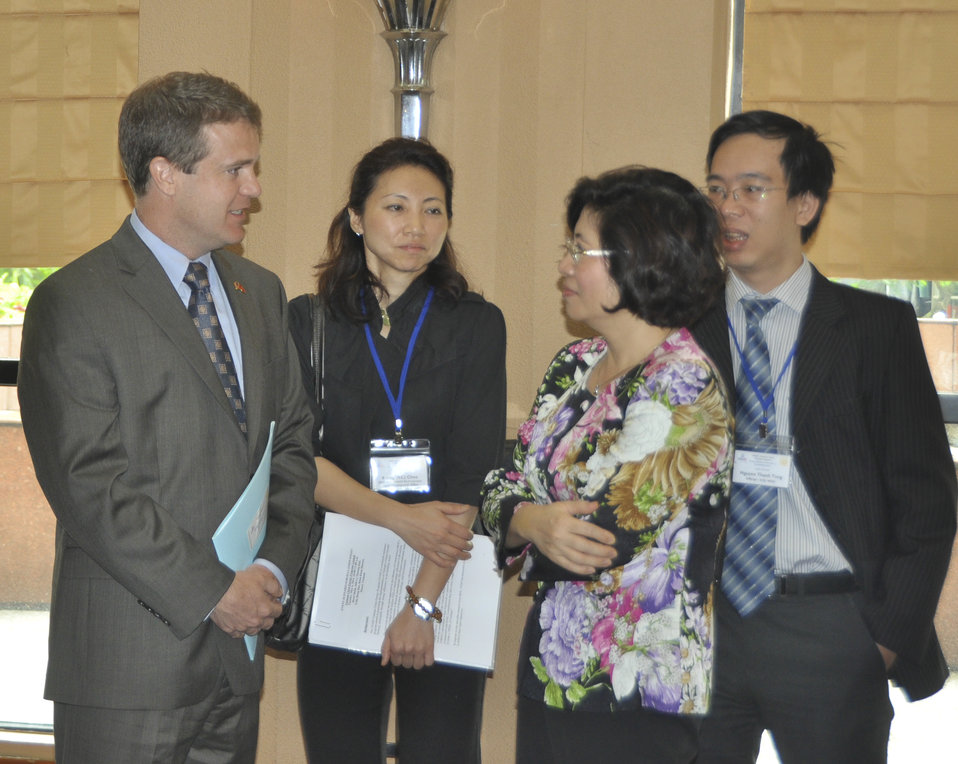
Acting Senior Deputy Assistant Administrator Jason Foley of USAID (left) and Ms. Phan Thi My Linh, Vice Minister of Vietnam’s Ministry of Construction (right)

Hanoi, May 6, 2014.